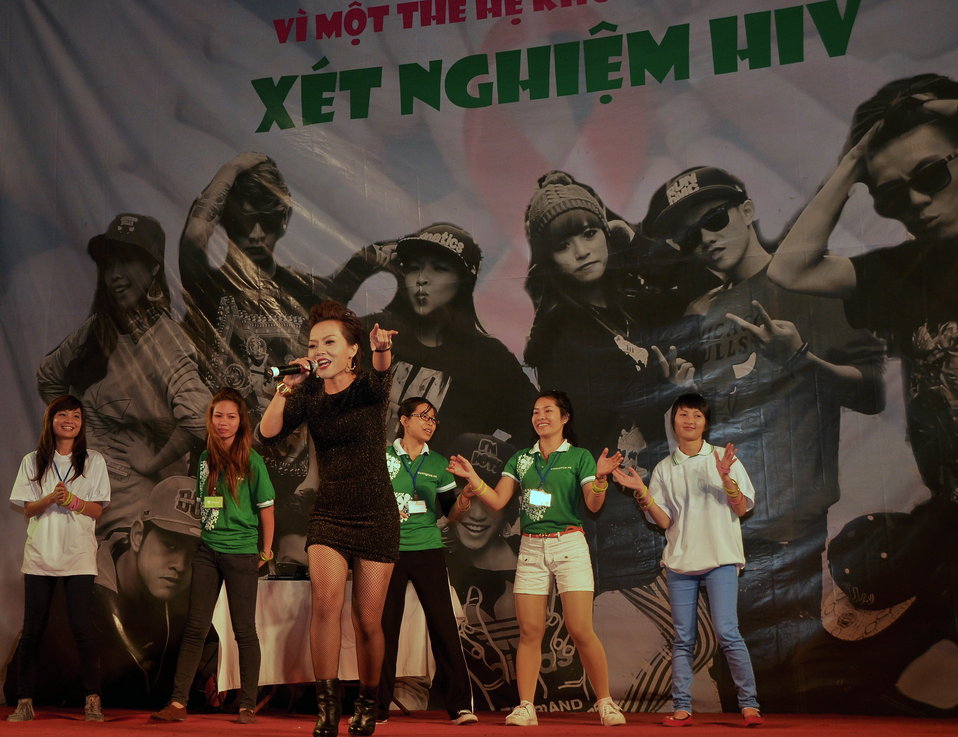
USAID and PEPFAR supports an outdoor concert to promote Vietnam's national action month for HIV

Hanoi, December 18, 2012.